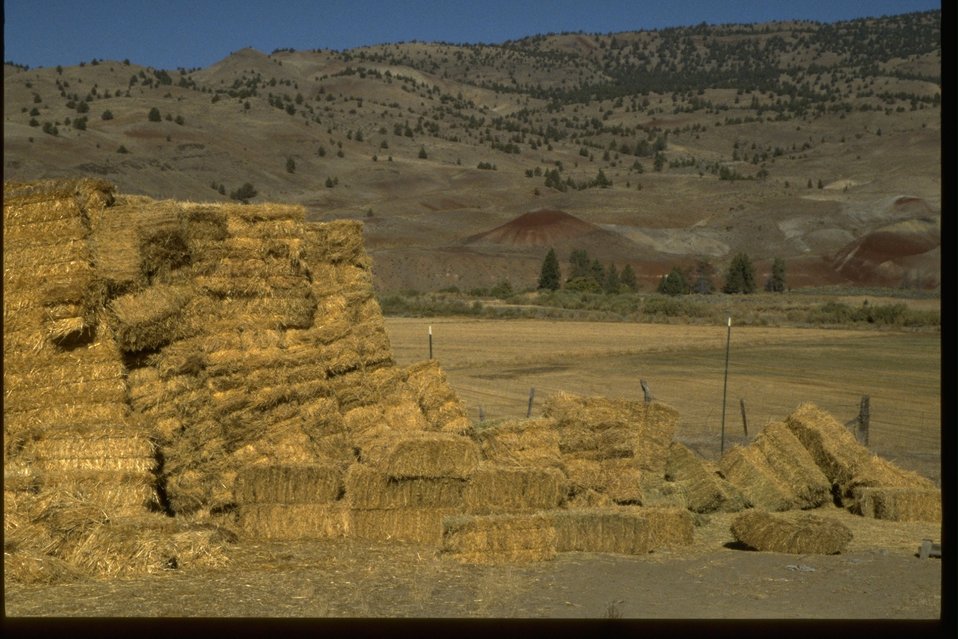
Bailed hay or straw in the Bridge Creek agricultural fields.